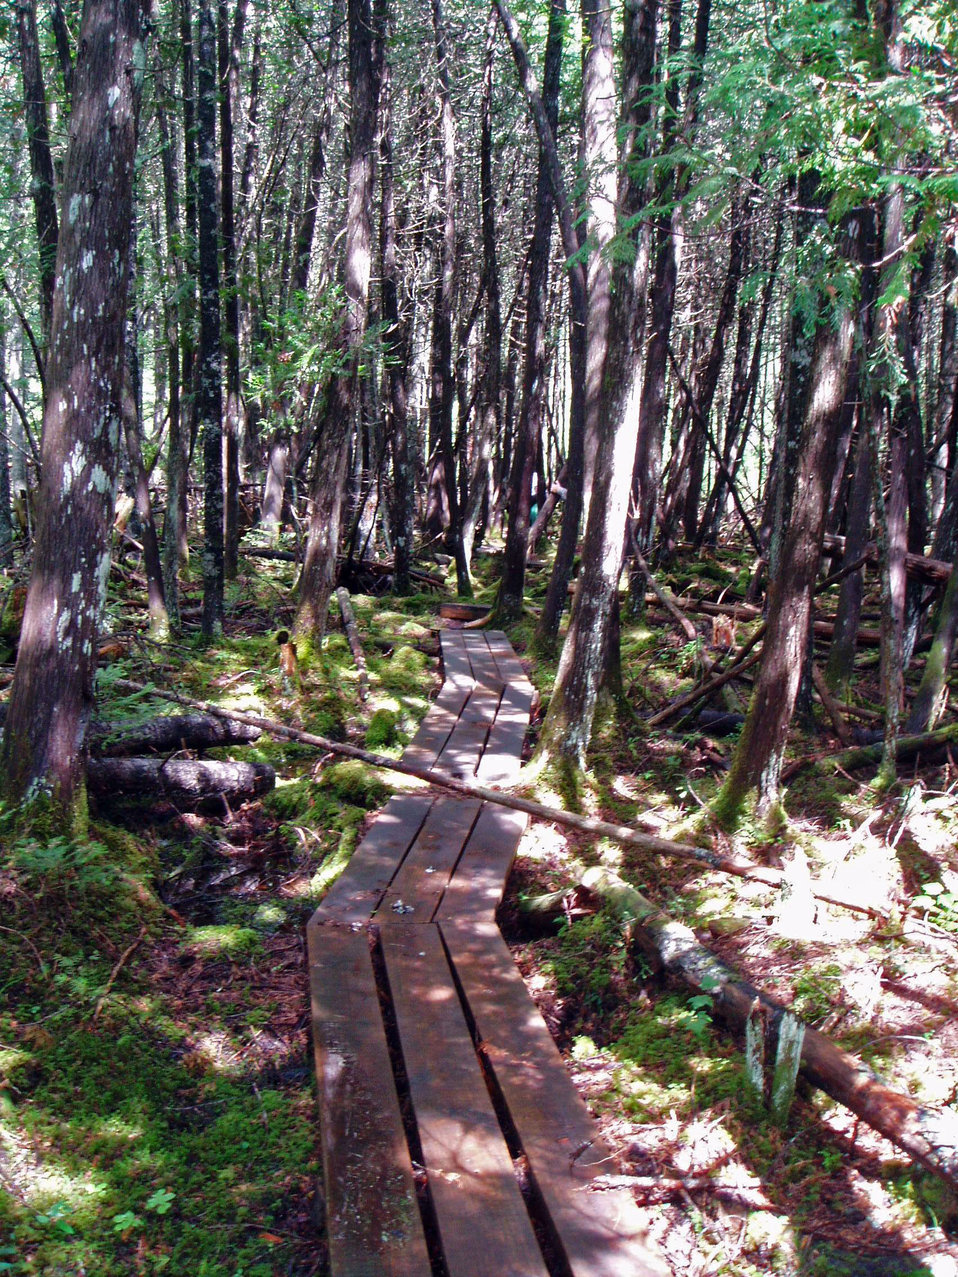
Johnson Brook Trail

Sunkhaze Meadows National Wildlife Refuge, ME.